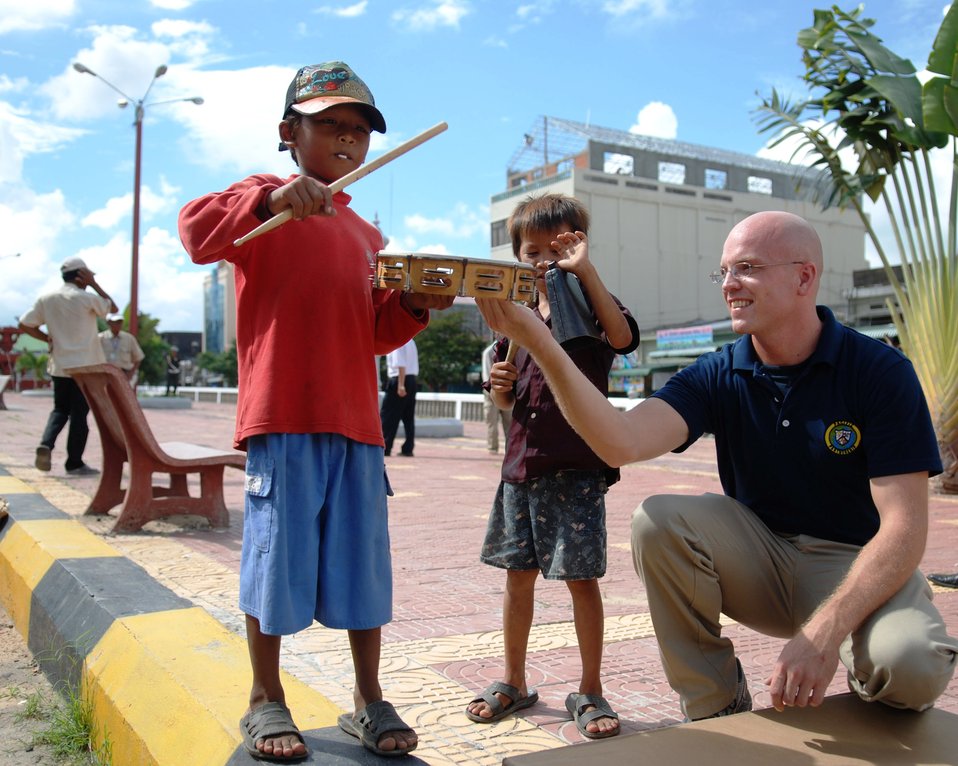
Musician 2nd Class Steven Freeman Holds a Tambourine for a Cambodian Youth

Musician 2nd Class Steven Freeman, currently embarked aboard the Military Sealift Command hospital ship USNS Mercy (T-AH 19) for Pacific Partnership 2010, holds a tambourine for a Cambodian youth during U.S. Pacific Fleet Band’s performance in Sihanoukville, Cambodia, on June 26, 2010. Pacific Partnership 2010 is the fifth in a series of annual U.S. Pacific Fleet humanitarian and civic assistance endeavors aimed to strengthen regional partnerships.